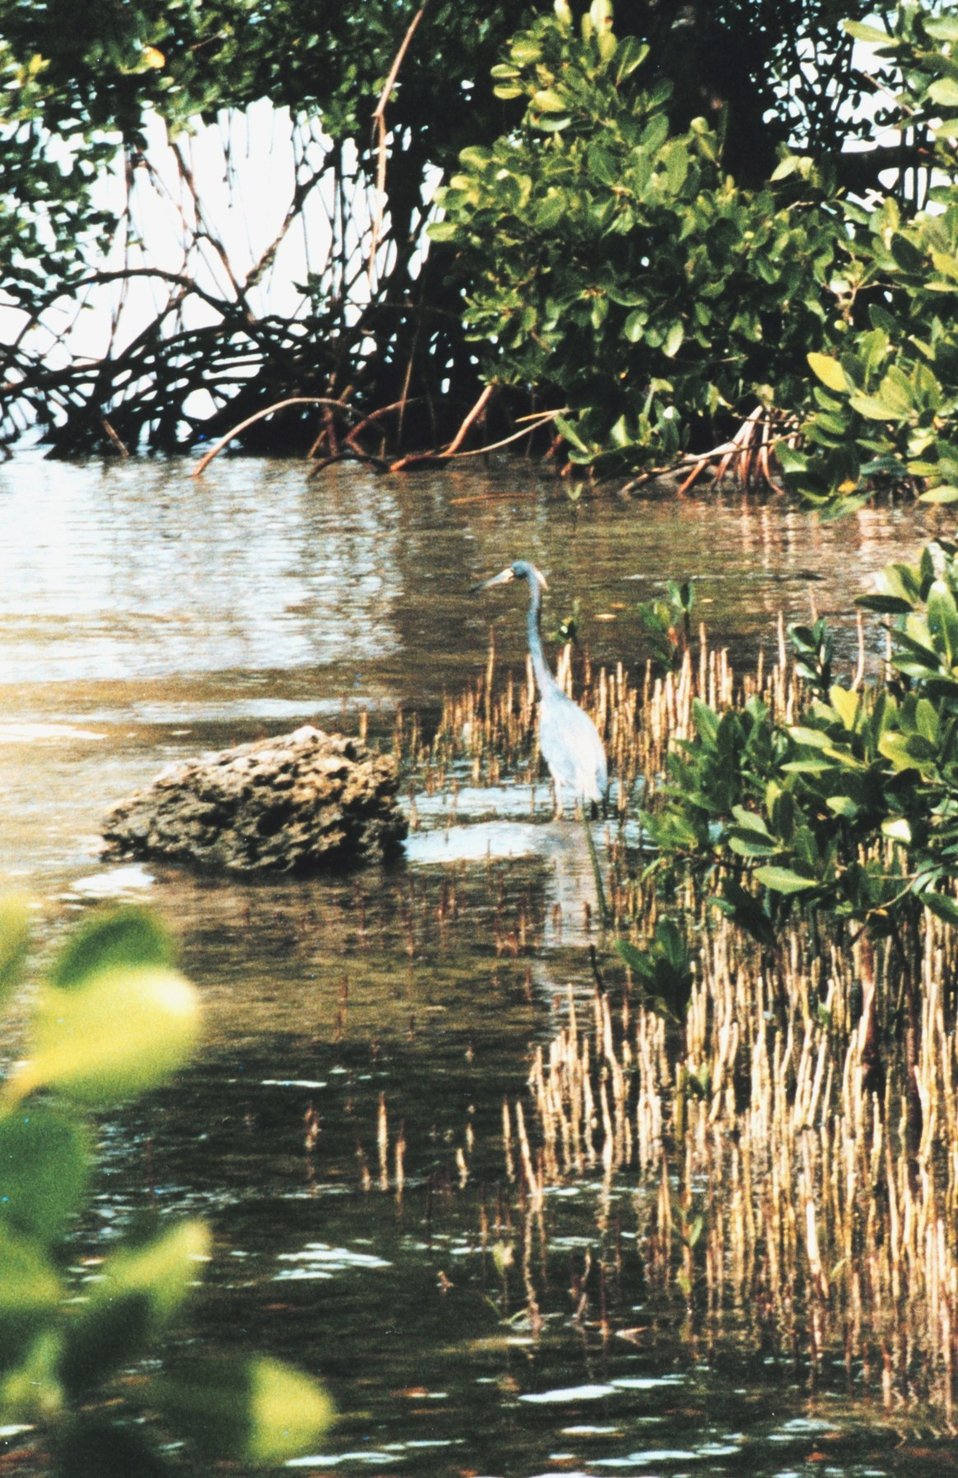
A Great Blue Heron waits patiently for dinner along a mangrove shoreline.